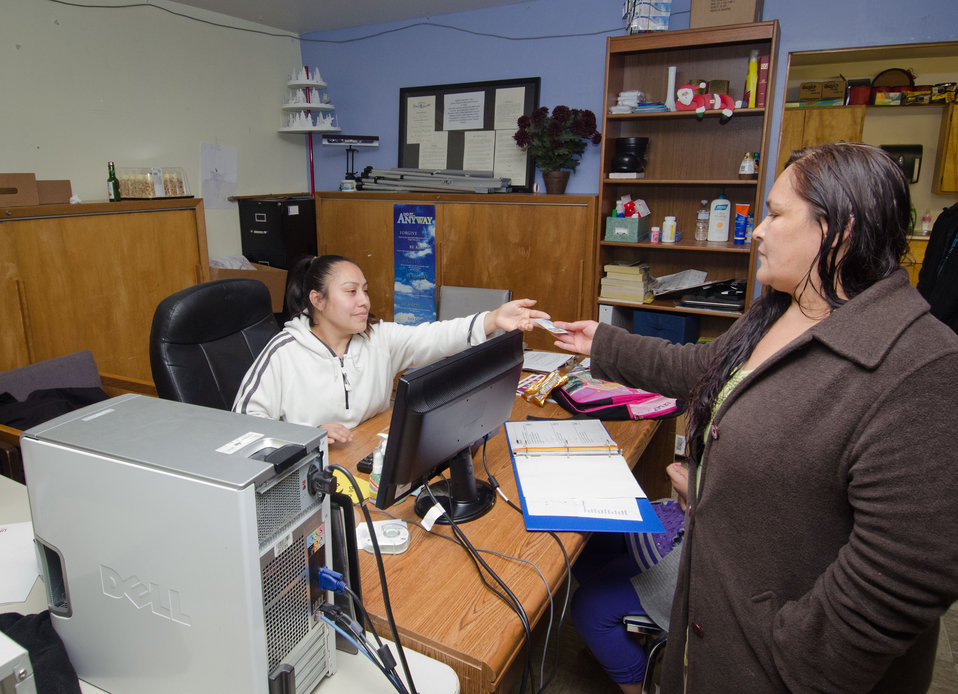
Joana Ramos (left) helps Amanda Arthur (right) check in at Tukwila Pantry, Tukwila, WA, on Thursday, October 20, 2011. The pantry provides monthly food bank services to individuals and families in cities of Tukwila, SeaTac, Burien and the Boulevard Park community. Congregate meal service is held each Tuesday at their location in the Riverton Park United Methodist Church. The church provides some funds, several large rooms, and outdoor operating space for the pantry’s food distribution, shipping container storage units, trailer, tents, shelters and refrigeration truck. The pantry's weekly Tuesday’s Table provides 150 hot meals to seniors, low-income families, homeless individuals and those in transition. Additionally, emergency referral services are provided to assist individuals connecting with agencies that can address their needs. Executive Director Joe Tice grew up in Tukwila and feels compelled to give back to economically challenged community of 25,000 families in 3,000 households. “Since the pantry’s founding in 2000, census figures show poverty has risen 300%,” said Joe Tice. “85-95% of elementary school children are enrolled in SNAP (U.S. Department of Agriculture Supplemental Nutrition Assistance Program).” At the pantry’s height, it delivered 3.8 million pounds of food (2009), but with the economic downturn Tice projects 2011 deliveries to total 2.6 million pounds. Tice, considers Tukwila Pantry as one of the smaller distribution points in the greater Seattle area. Some canned and dry goods are provided by
The Emergency Food Assistance Program (TEFAP) a Federal program that helps supplement the diets of low-income needy persons, including elderly people, by providing them with emergency food and nutrition assistance. A significant amount of the pantry’s food comes through Northwest Harvest, Washington's only nonprofit statewide food bank distributor; and Food Lifeline, the largest nonprofit food distributor in the state who solicit, receive, and distribute over 24 million meals of food to nearly 700,000 people through our network of 300 food banks (such as Tukwila Pantry), shelters and meal programs.